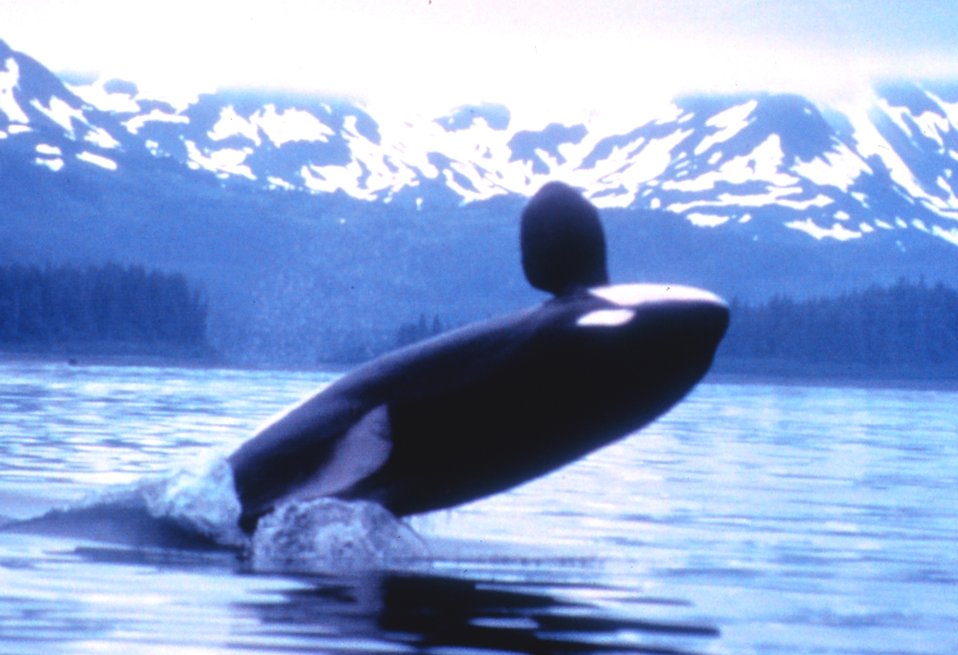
Killer whale breaching